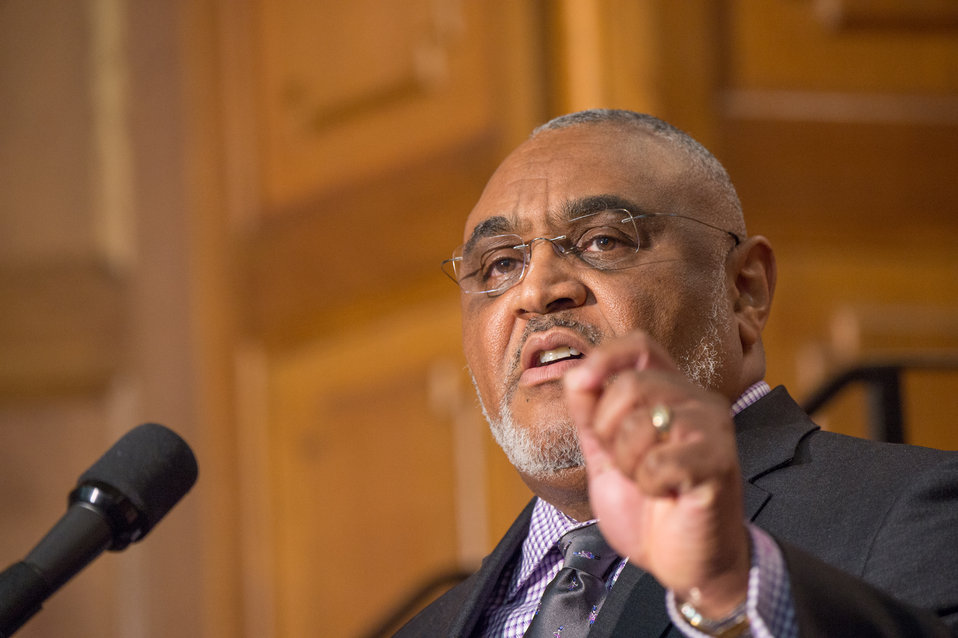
U.S. Department of Agriculture (USDA), Deputy Assistant Secretary for Administration and U.S. Army (retired) Malcom Shorter provides closing words, during the 2013 USDA Veterans’ Day Observance, whose theme is “VALOR, COURAGE, SACRIFICE – HONORING ALL WHO SERVED,” in Washington, DC, on Wednesday, November 20, 2013.